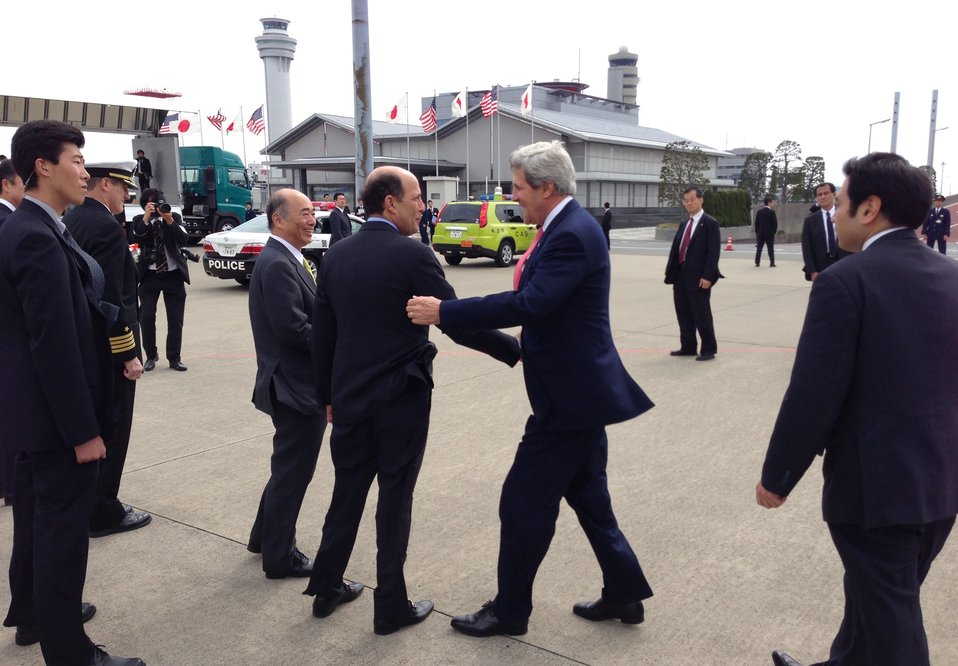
Secretary Kerry is Greeted by Ambassador Roos

U.S. Secretary of State John Kerry is greeted by John Roos, the U.S. Ambassador to Japan, after arriving at Haneda International Airport in Tokyo, Japan, on April 14, 2013.